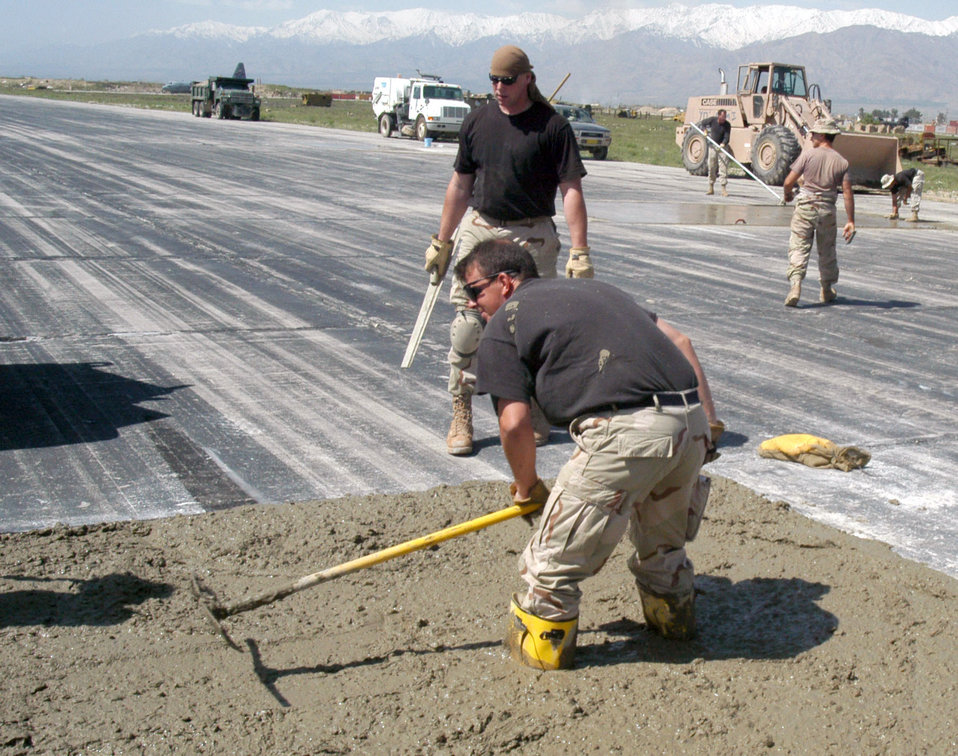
Knee deep

OPERATION ENDURING FREEDOM (AFPN) -- Tech. Sgt. James Holman spreads concrete in a hole on the active runway at Bagram Air Base, Afghanistan, as part of a $2.3 million airfield repair project. Holman is deployed form the 48th Civil Engineer Squadron at Royal Air Force Lakenheath, England.